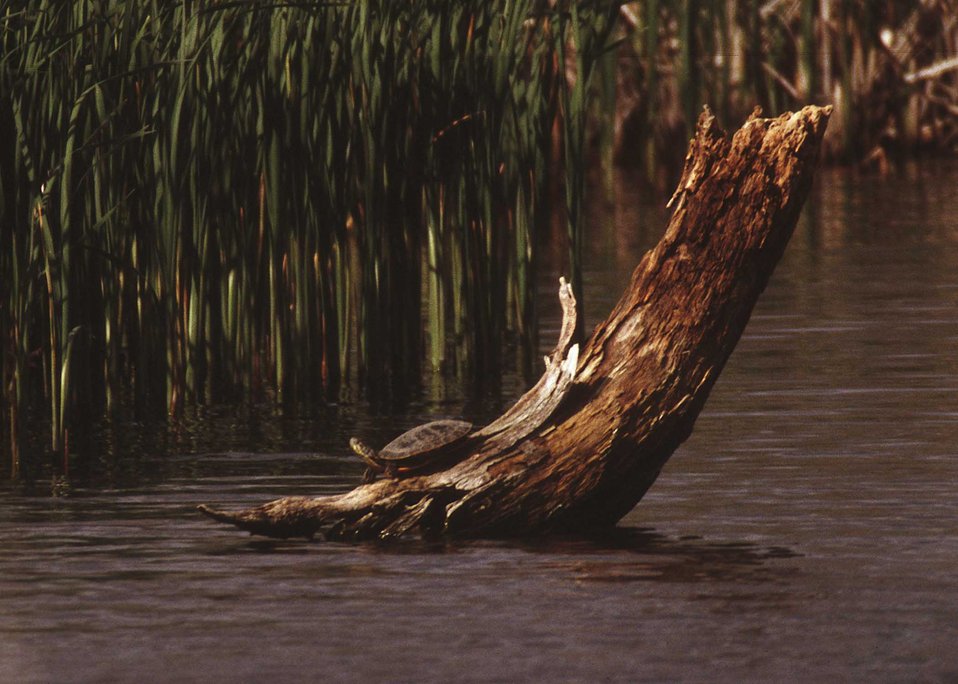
Turtle in a pothole wetland in South Dakota.